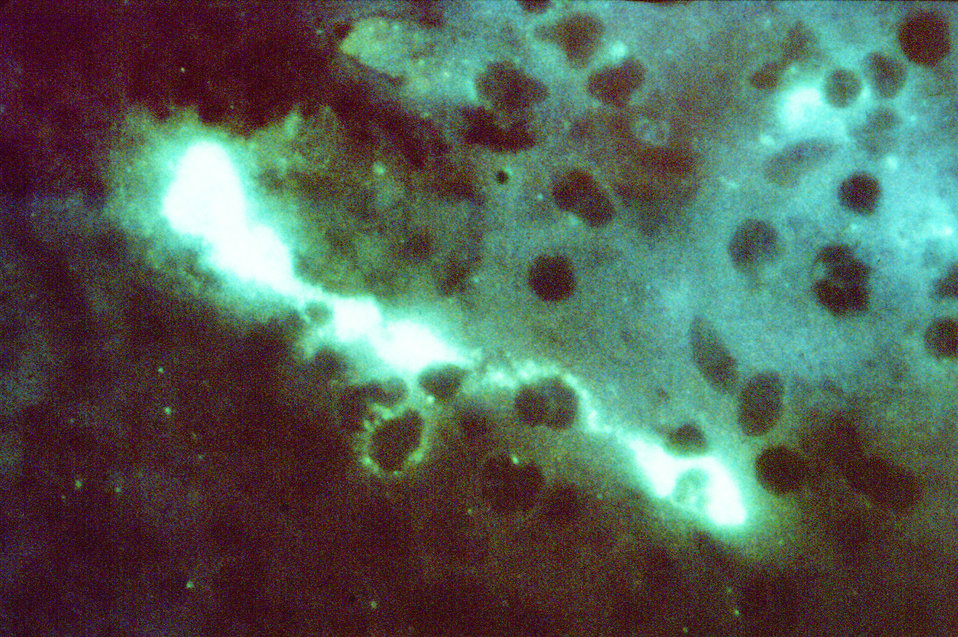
Magnified 400X, this direct FA stained mouse brain impression smear reveals the presence of the bacterium Chlamydophila psittaci, formerly Chlamydia psittaci, in a case of psittacosis..